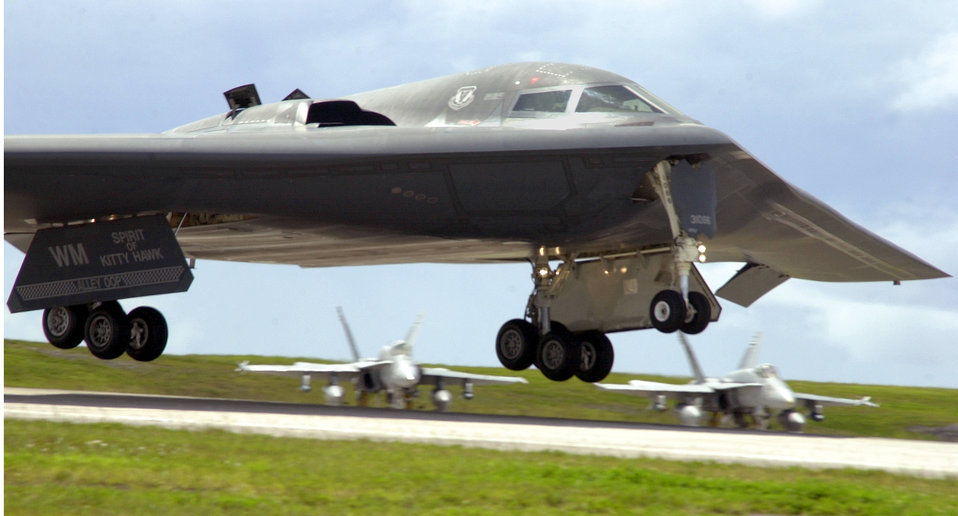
Final approach - landing gear down

ANDERSEN AIR FORCE BASE, Guam -- The B-2